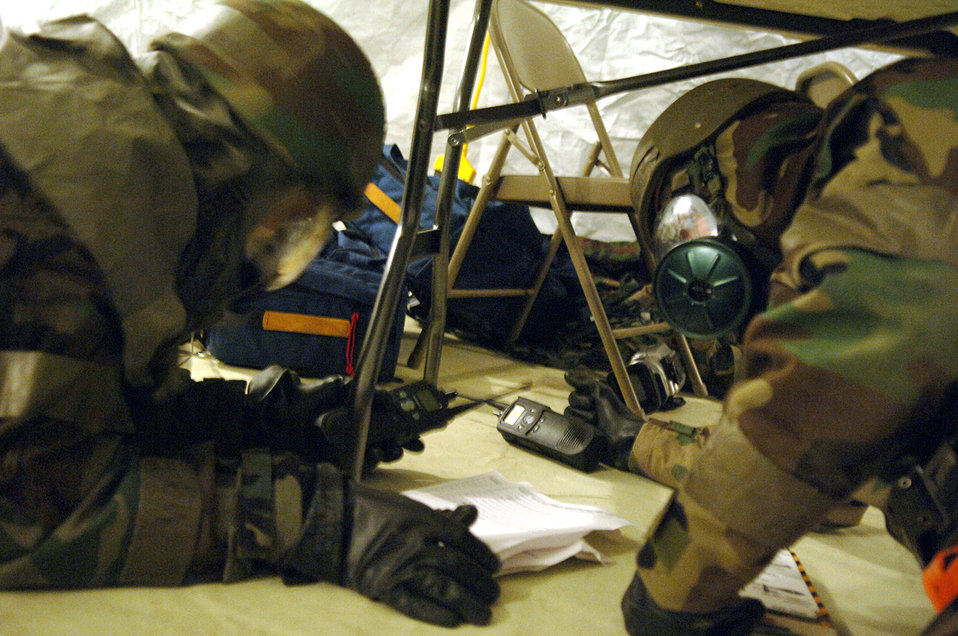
Continuing work

DAVIS-MONTHAN AIR FORCE BASE, Ariz. (AFPN) - Tech. Sgt. Rueben Ballesteros reviews his checklist with Senior Airman James Armer as they take cover in MOPP 4 gear during exercise Bushwacker 06-01 here.